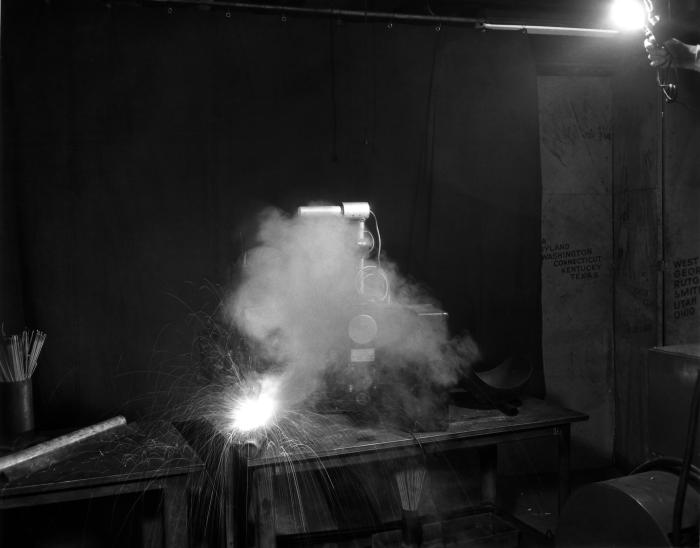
In this 1946 historical photograph an industrial hygiene air sampling flowmeter was shown in the process of sampling the air around a welding device, while a welding process was underway. This image was provided by the Center for Disease Control's (CDC), National Institute for Occupational Safety and Health (NIOSH). Evidence of workplace pollution, acquired in this manner, helped to forge the rules and regulations to which industries must abide in order to create a healthier workplace environment for those who must inhabit such places on a daily, longterm basis, without having to suffer the consequences brought on by pollutant inhalation.